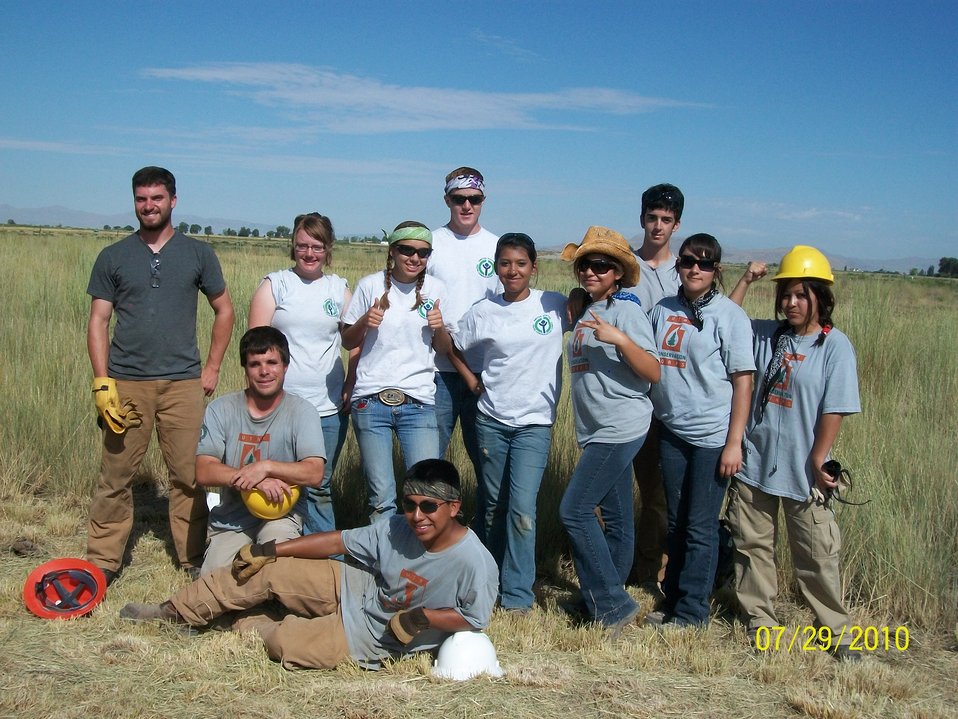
Youth Conservation Corps and Utah Conservation Corps team up to complete a trail project to increase the current trail at the James V. Hansen visitor center at Bear River Migratory Bird Refuge by 1.2 miles. Coordinates were set early in the summer during higher water levels and the crew used a map and flagging tape to mark where the grass would need to be cut short to begin work. This work was difficult, particularly in the hot sun, but very important to the refuge’s visitation program. They were assisted by the Utah Conservation Corps (UCC) who were primarily a bilingual (Spanish) crew and had spent the summer working on trails in various parts of Northern Utah and were able to share their expertise about trail work.